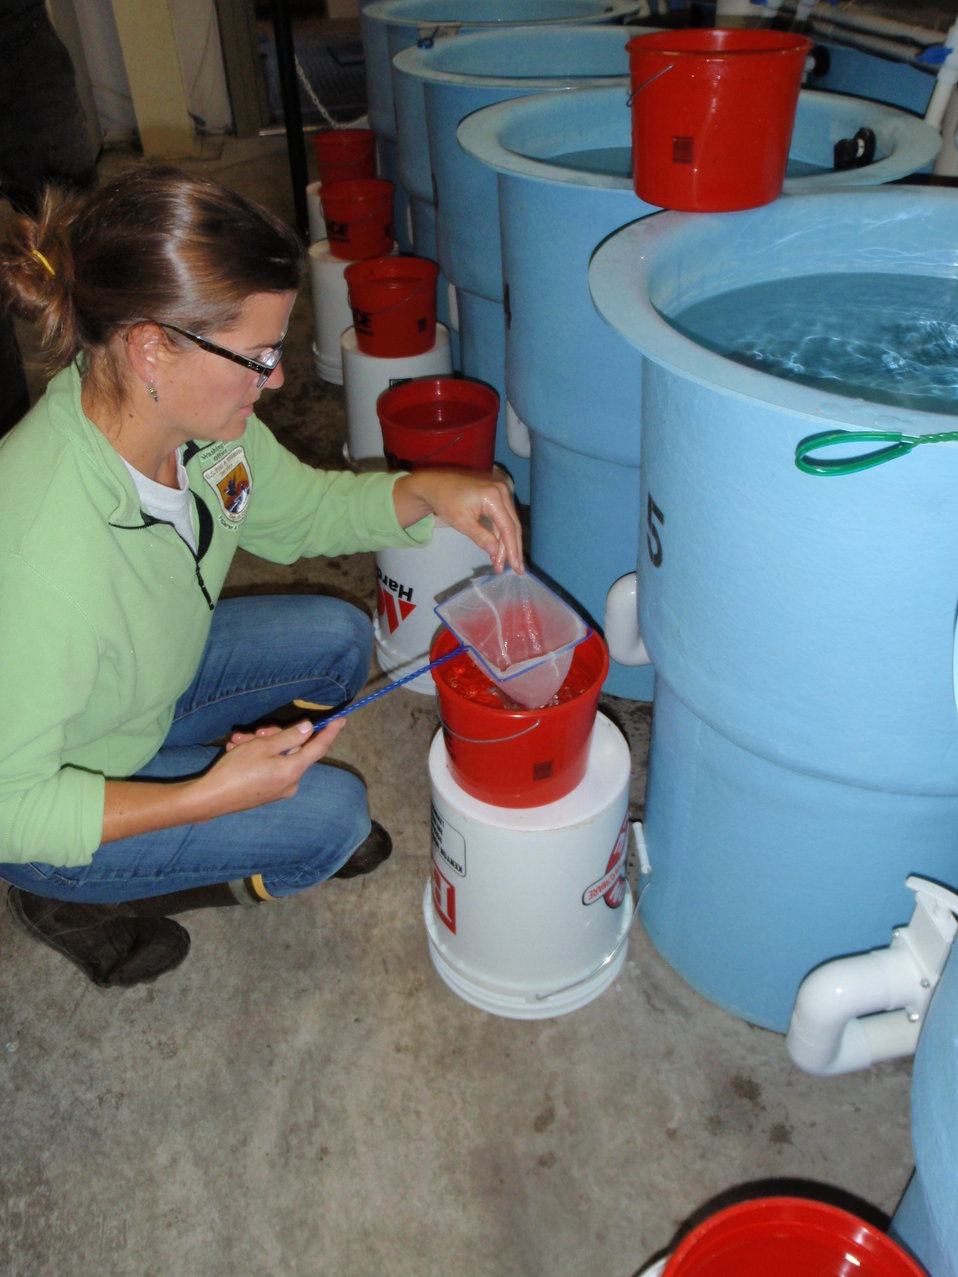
Molly Bowman netting rainbow trout fry into buckets of sedative solution during an AQUI-S 20E field efficacy study.

Rachel Carson Award for Scientific Excellence (Group) – 2013